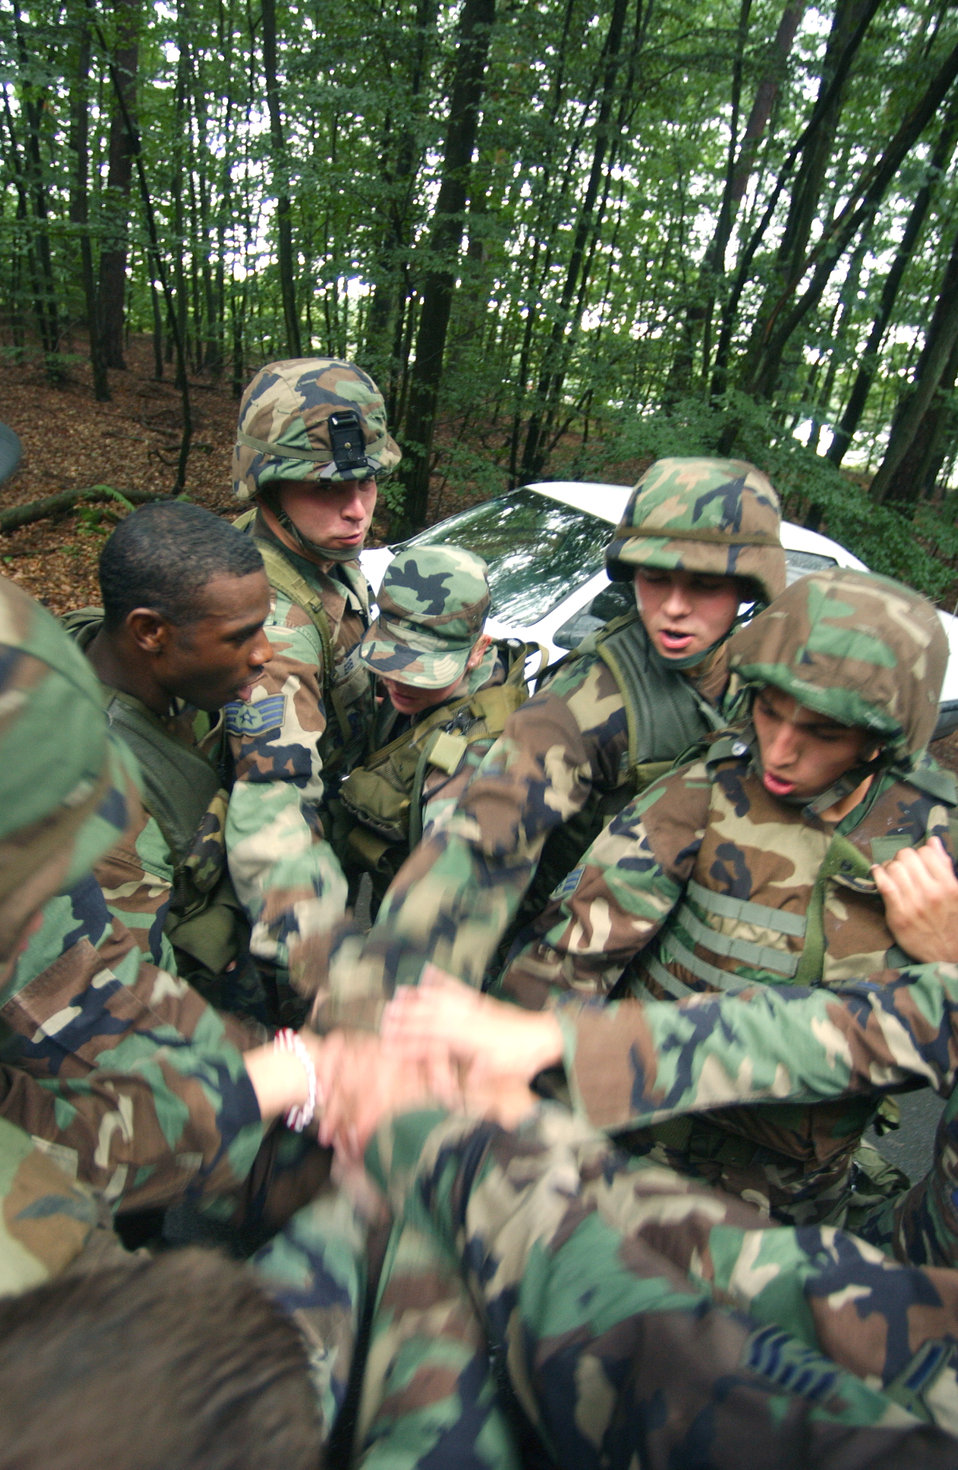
Hoo-rah!

VOGELWEH AIR BASE, Germany - After completing a three-mile run in full gear, a group of Security Forces bring it in for a little encouragement and celebration here Aug. 24. They are competing for a position on the U.S. Air Forces in Europe 2004 Defender Challenge team The Air Force-wide competition determines the